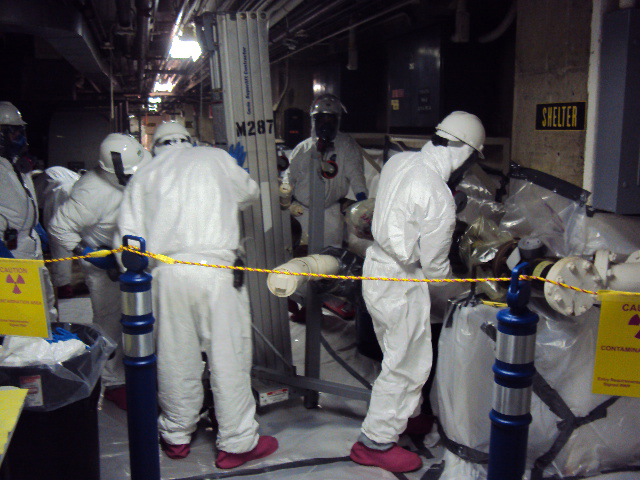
Argonne Forges Ahead in Waste Removal, Facility Demolitions with Recovery Act Help

With the help of $79 million from the Recovery Act, Argonne National Laboratory continues to dramatically reduce its inventory of radioactive materials and waste while making significant progress in its decontamination and demolition (D&D) program.